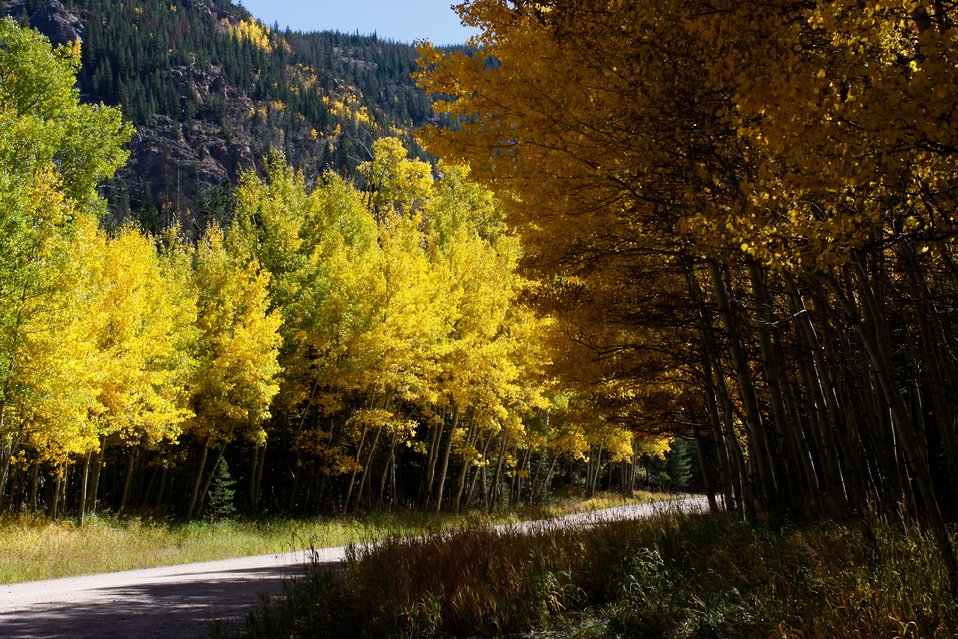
Green, yellow and orange aspen leaves shimmer in the sun along Laramie River Road on the Roosevelt National Forest, CO.